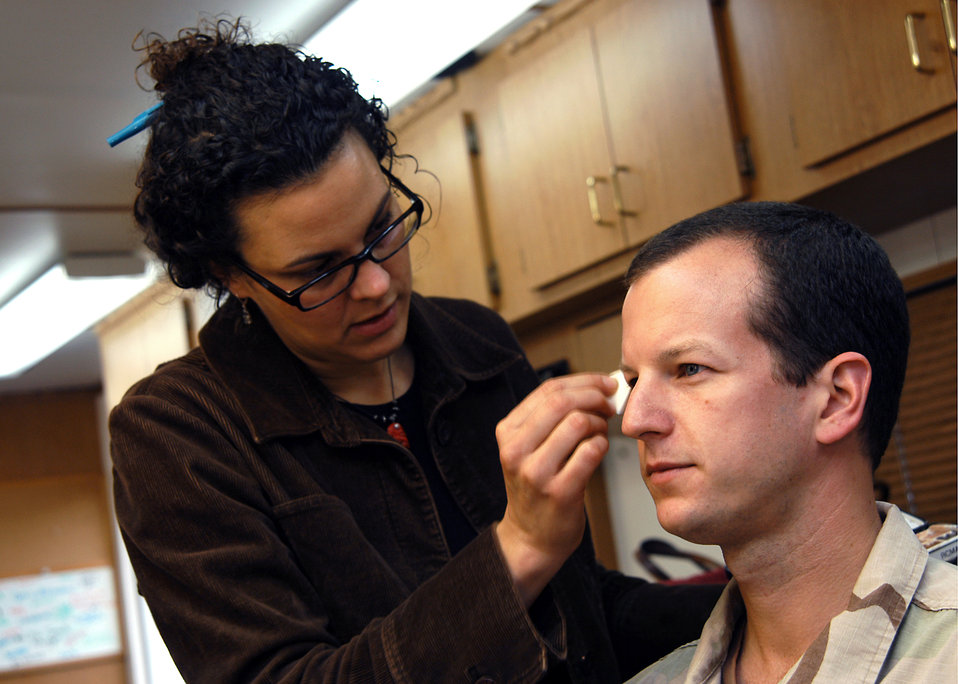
Super Bowl commercial spotlights Airmen

LOS ANGELES -- First Lt. Jeff McGowan has make up applied before shooting his scene for a commercial scheduled to air during the Super Bowl. Lieutenant McGowan is an engineer at the Space and Missile Systems Center at nearby Los Angeles Air Force Base.